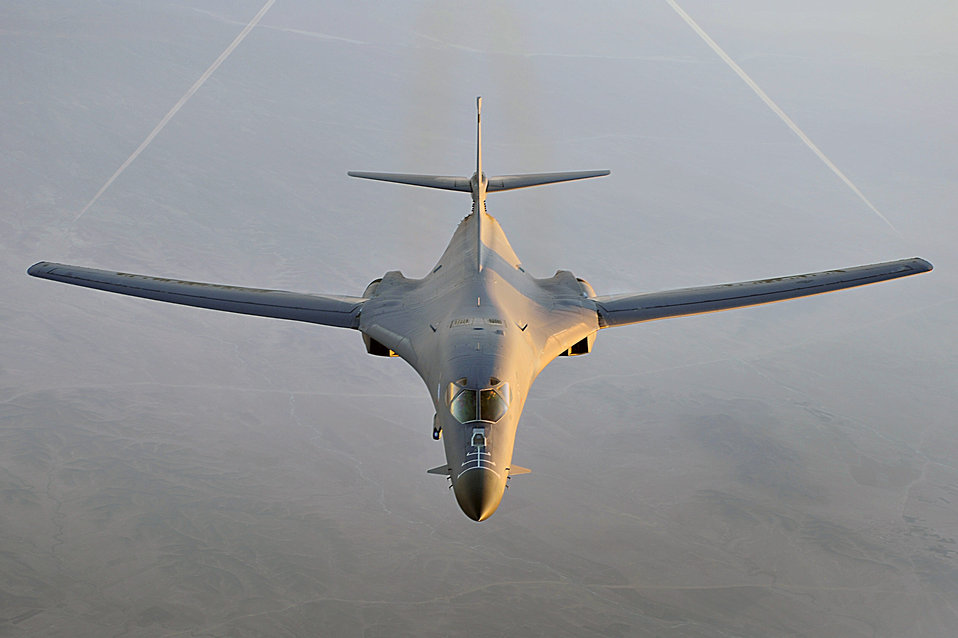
Sniper pod improves capabilities, lethality of B-1

A B-1B Lancer flies a combat patrol over Afghanistan in support of Operation Enduring Freedom. B-1s are being equipped with Sniper Advanced Targeting Pods to enable aircrews to